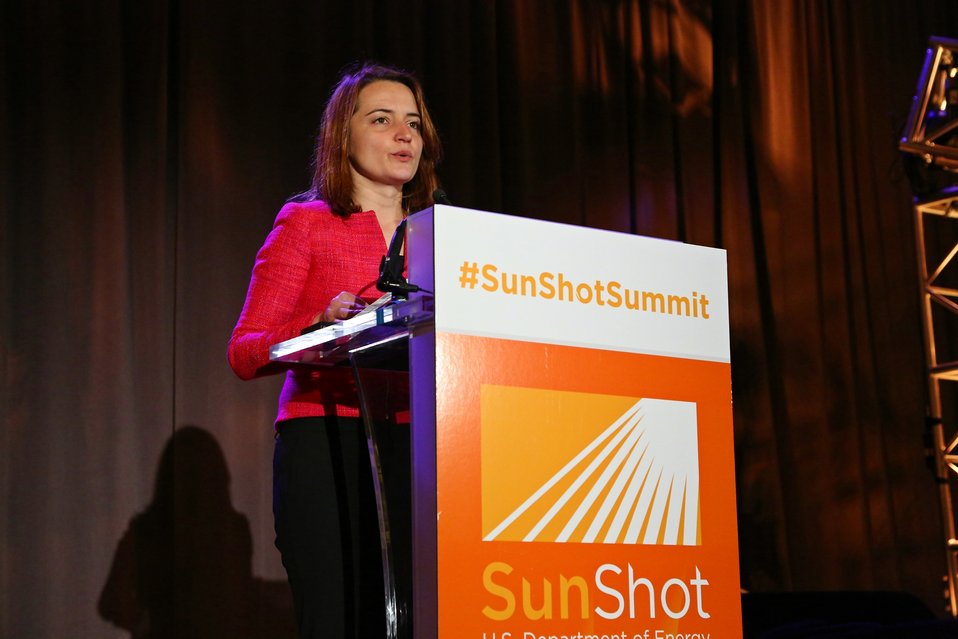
Day 2 Keynote Session 6

Dr. Sekaric, SunShot Technology to Market Program Manager introduces keynote speakers.